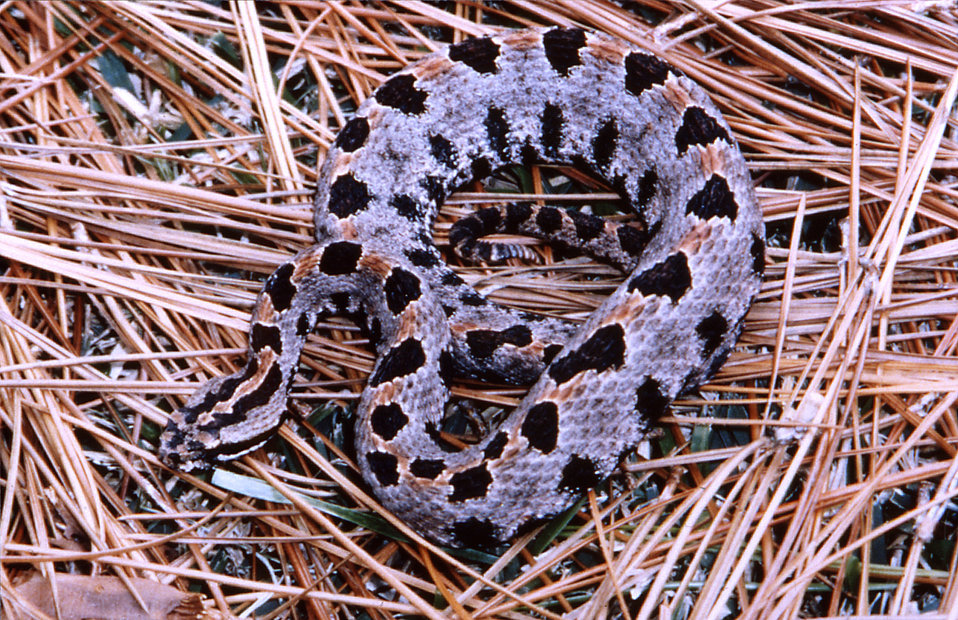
This 2005 photograph depicted a 'western pygmy' rattlesnake, Sistrurus miliaris streckeri, which ranges throughout most of Mississippi, Arkansas and Louisiana, and into eastern Texas and Oklahoma, placing it in hurricane-prone areas, which is of importance to those living in these regions, and first-responders offering aid to those affected by such a disaster. It is the most widely distributed pygmy rattlesnake subspecie (Connant, 1975). The ground color of this subspecie is typically light pink to tan. Unlike the other two subspecies, the dorsal botches of the western pygmy are laterally extended into an irregular pattern of transverse bar-like spots. Although it is a wide ranging animal, the western pygmy rattlesnake is spottily distributed over its range, and is a rather uncommon snake in many areas, most notably in the State of Texas (Price, 1996).